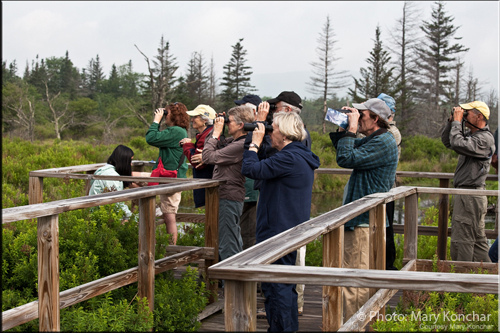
We're for the Birds!

Birders spot migratory birds from the Freeland Boardwalk Overlook, a popular wildlife viewing spot at Canaan Valley National Wildlife Refuge.